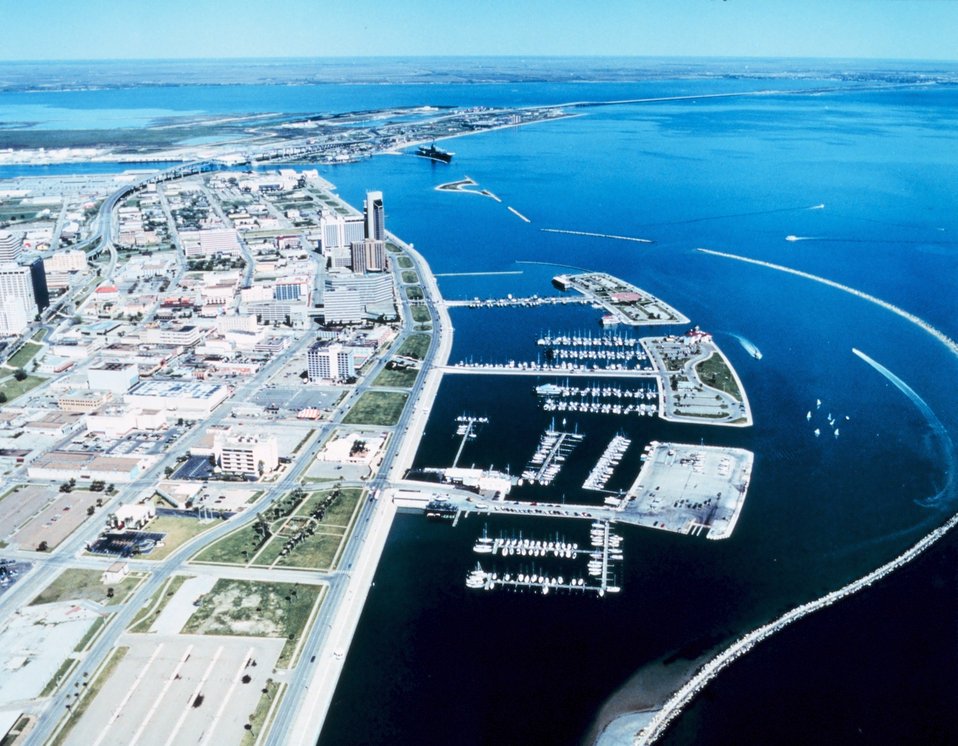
2748 North Latitude 9724 West Longitude.